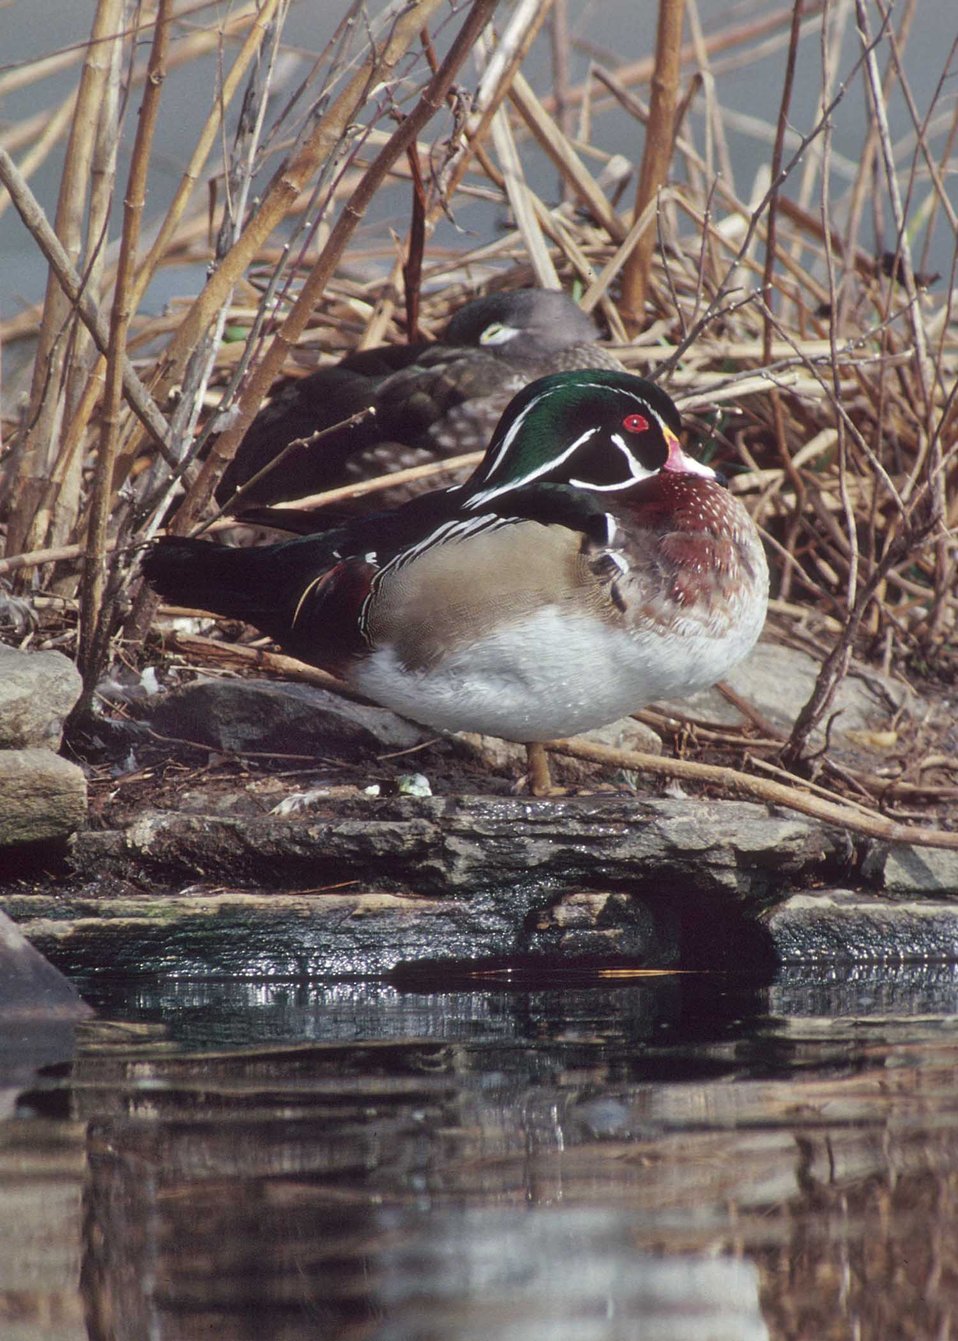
Wood ducks rest in a Maryland wetland.